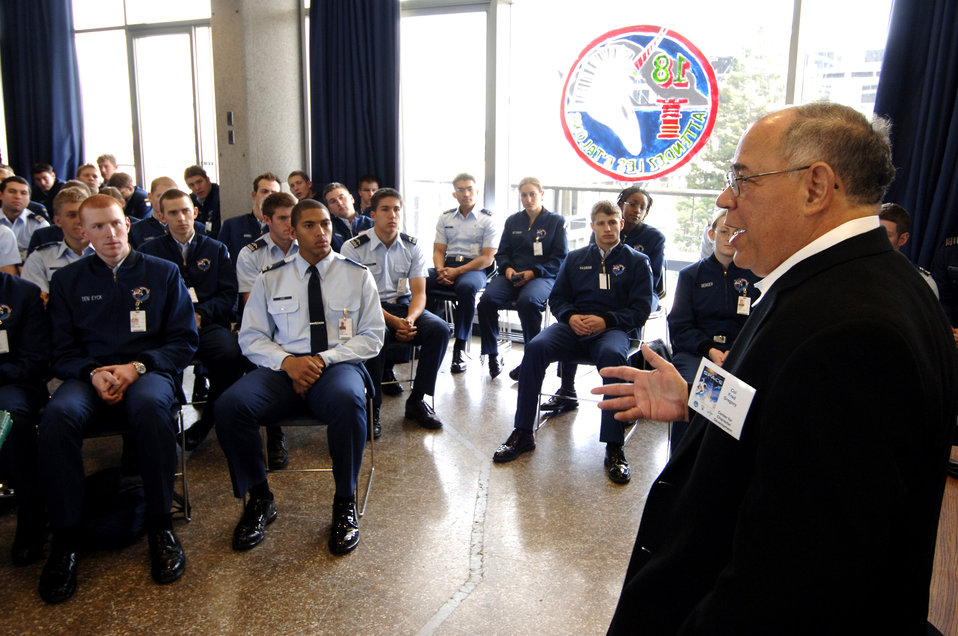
Life at the academy

Retired Col. Fred Gregory speaks to Cadet Squadron 18 members during their lunch period in April at the academy. Colonel Gregory, a 1964 academy graduate, is also a veteran of three space shuttle missions, logging more than 455 hours in space. The colonel also logged more than 6,976 hours flying time in more than 50 types of aircraft -- including 550 combat missions in Vietnam.